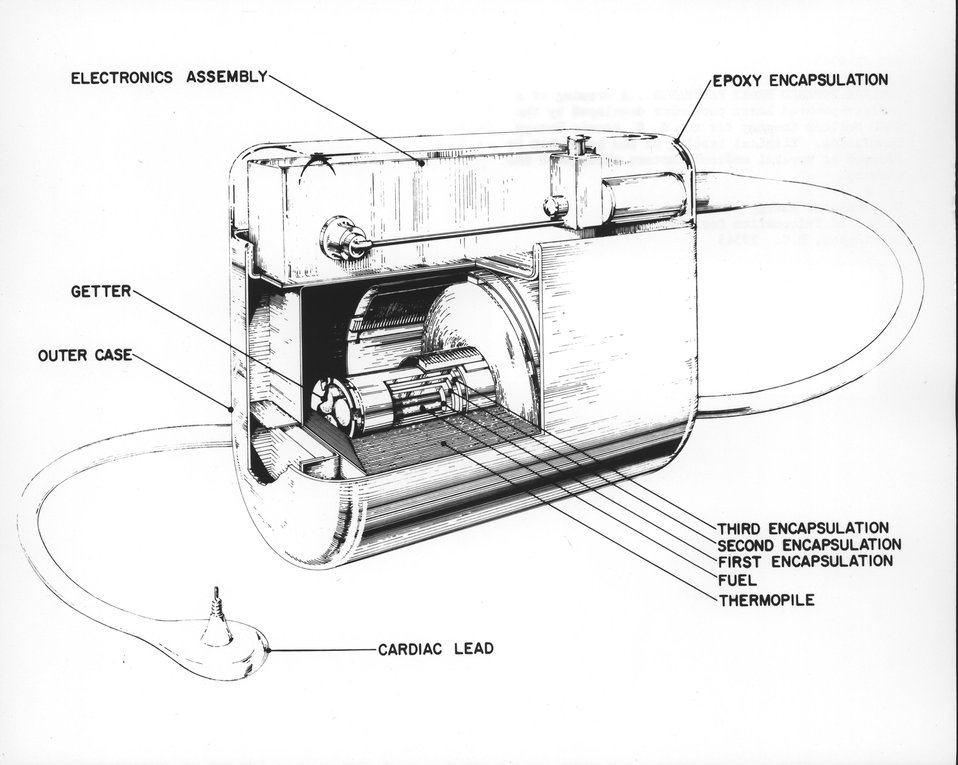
A drawing of a nuclear-powered heart pacemaker developed by the ARCO Nuclear Company for the U.S. Atomic Energy Commission. Circa 1973.